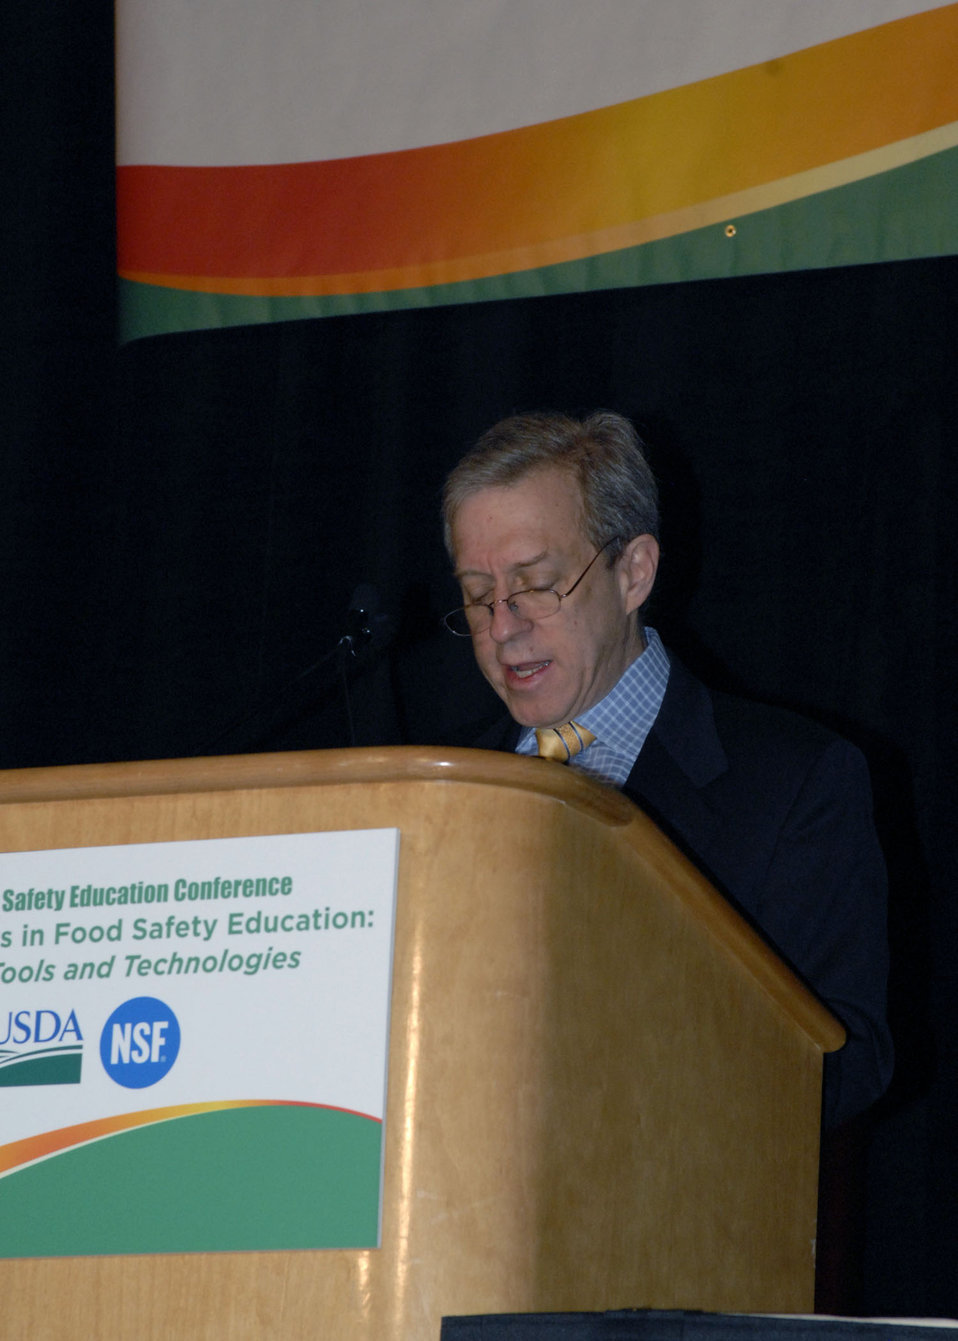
Agriculture Deputy Under Secretary for Food Safety, Jerold R. Mande speaks at the 2010 Food Safety Education Conference in Atlanta, GA., on Mar. 245, 2010. The conference was attended by national leaders from government, education, public health, industry, and consumer groups, and is one of the largest and most influential meetings devoted to educating the public about food safety. USDA photo 10di1284-14